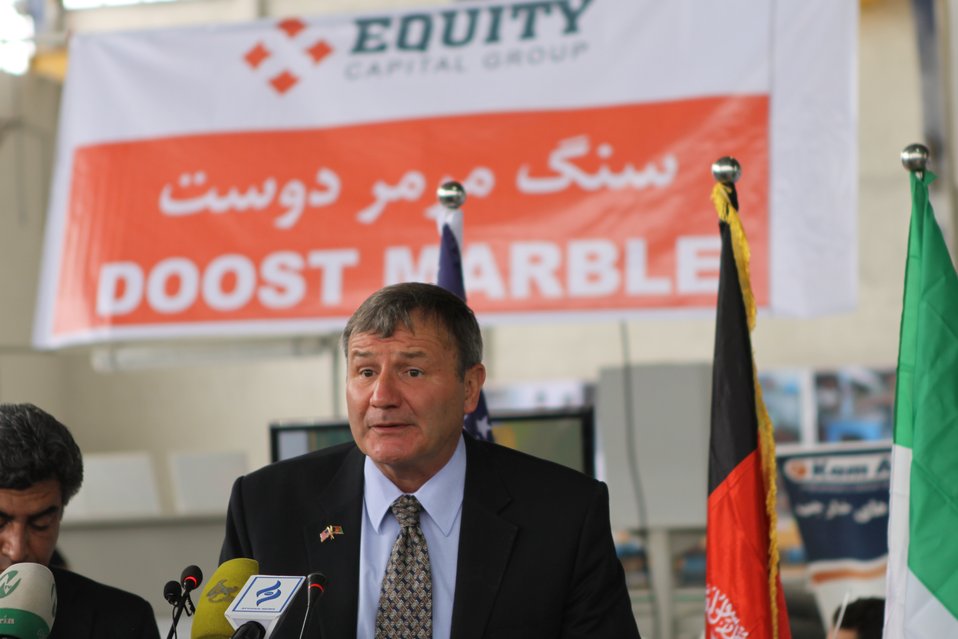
100525 Hirat Marble Conference 203